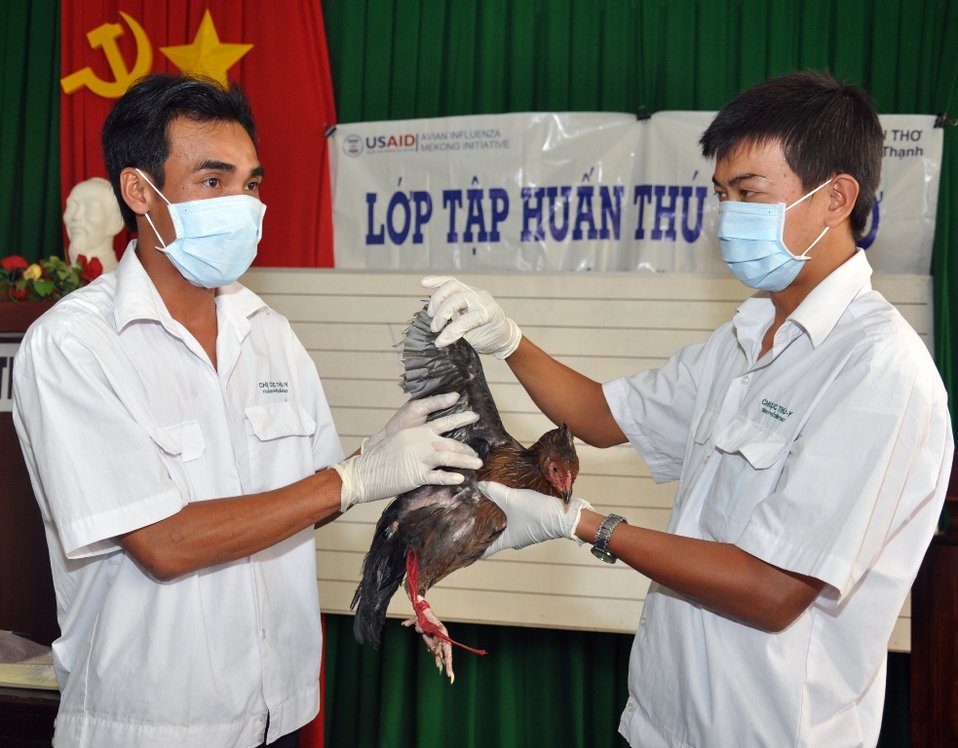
USAID helps combat avian and pandemic influenza